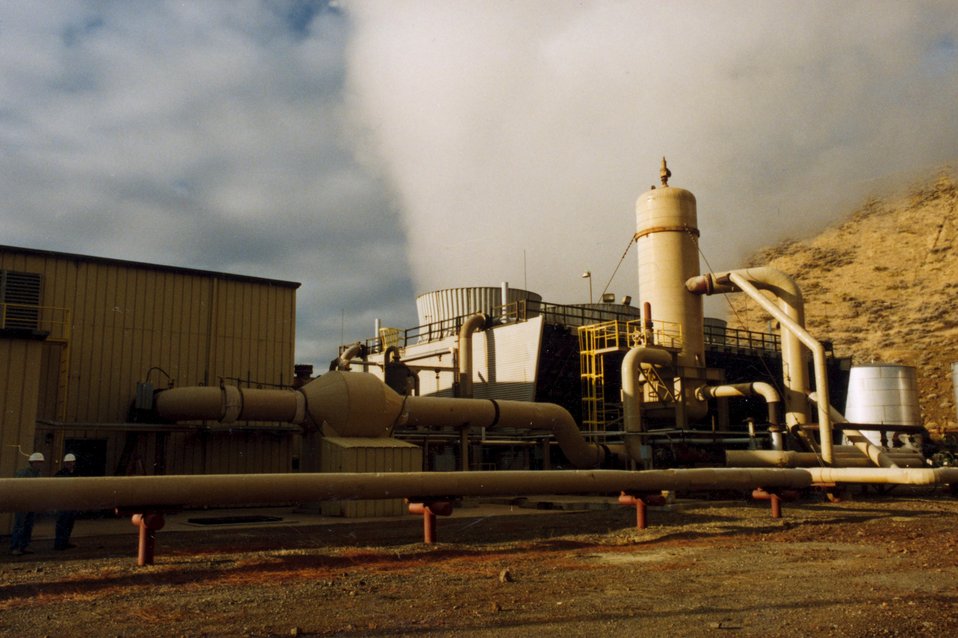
THE STEAMBOAT HILLS GEOTHERMAL POWER PLANT IN STEAMBOAT SPRINGS, NEVADA.

THE STEAMBOAT HILLS GEOTHERMAL POWER PLANT WAS BUILT IN 1988 AND IS OWNED BY YANKEE CAITHLESS JOINT VENTURE L.P.